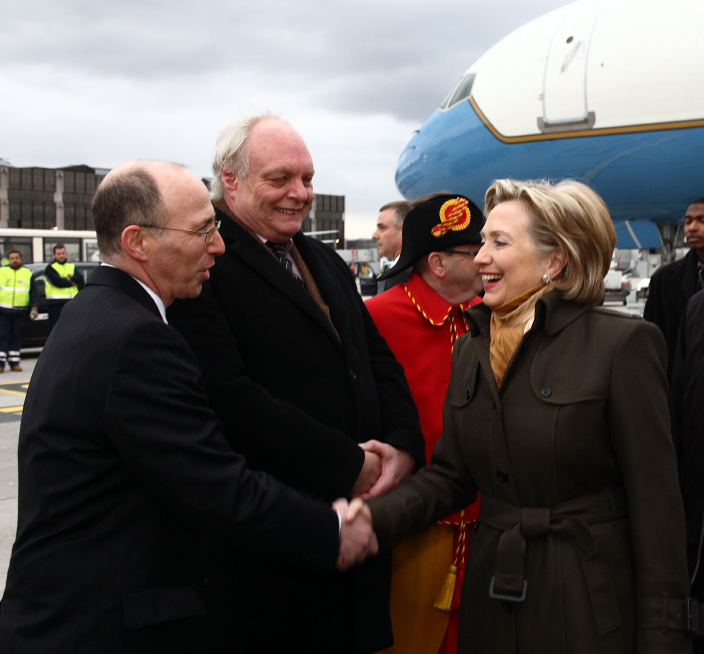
Arrival in Geneva, Switzerland

U.S. Secretary of State Hillary Rodham Clinton arrives in Geneva, Switzerland March 6, 2009.